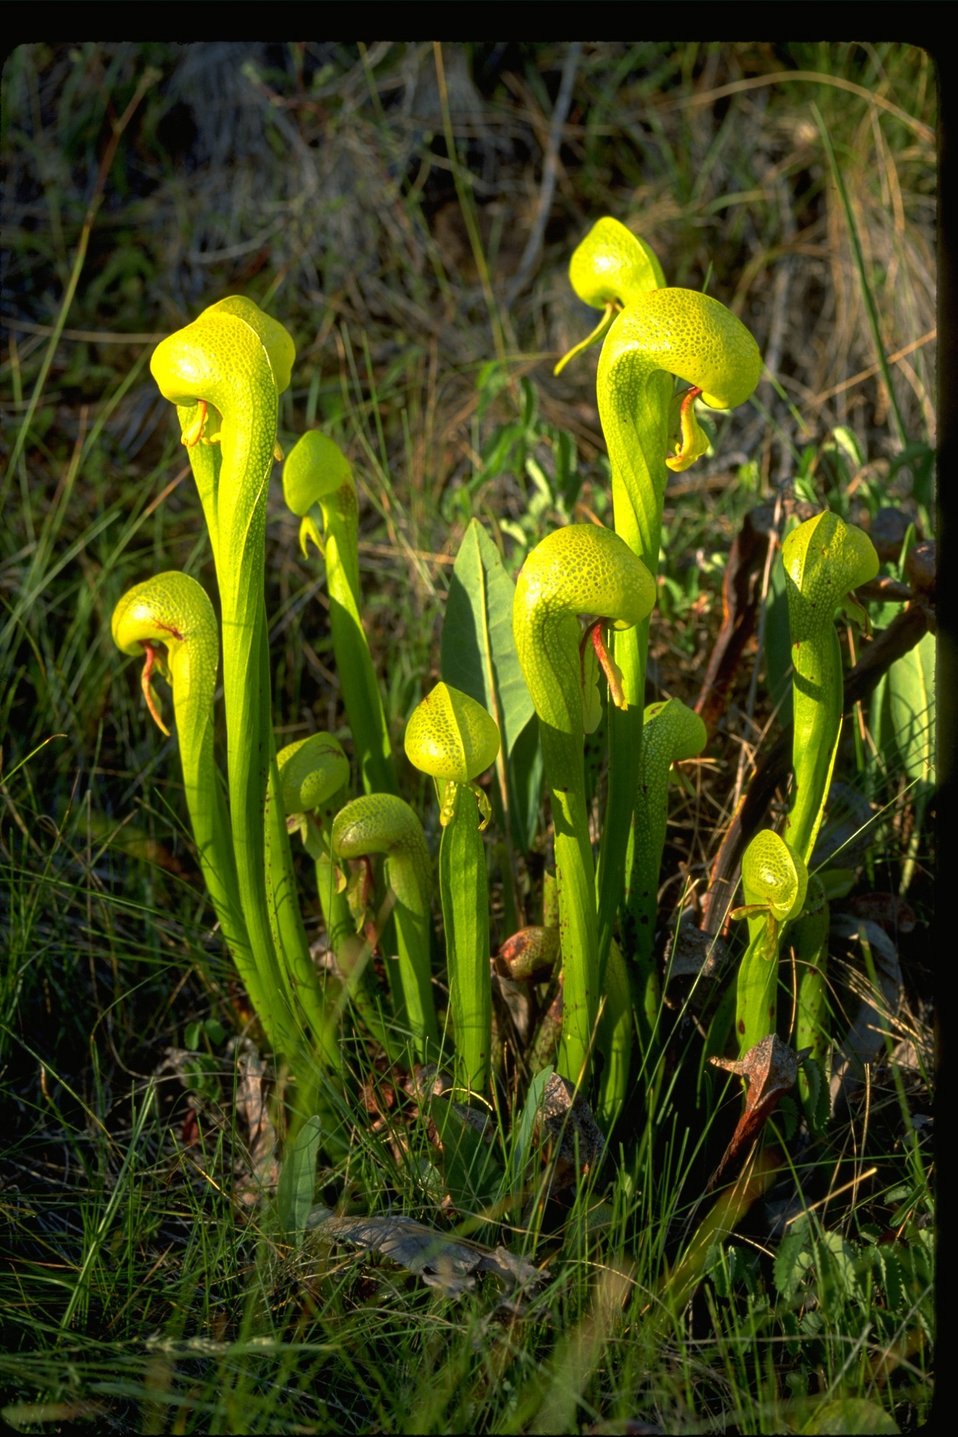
Darlingtonia, a Californian insectivorous plant, from the Sarraceniaceae family. Also known as the Pitcher plant.